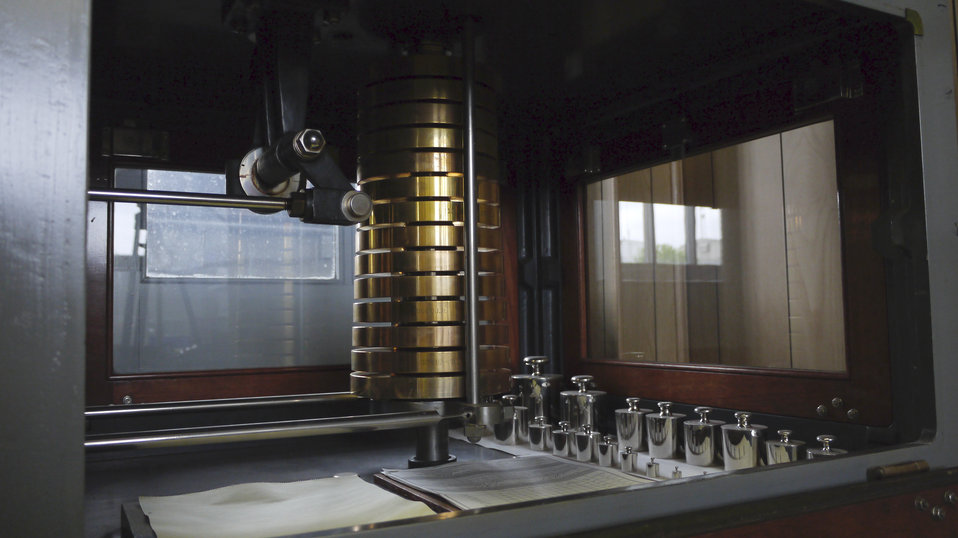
The U.S. Department of Agriculture’s (USDA) Grain Inspection, Packers, and Stockyard Administration (GIPSA) entered into an agreement with the National Institute of Standards and Technology (NIST) and the Association of American Railroads (AAR) in 1980 transferring responsibility to USDA’s GIPSA to maintain the Master Scale facility in Chicago, IL and calibrate all the master scales in the continental U.S. annually.